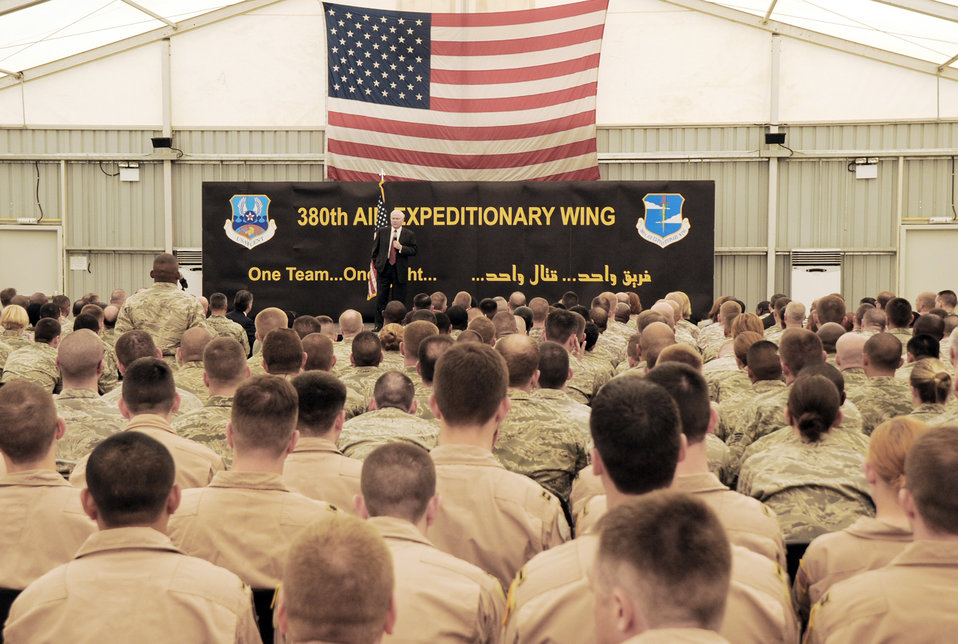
Defense secretary discusses Iraq, Afghanistan with deployed troops

Defense Secretary Robert M. Gates addresses the men and women of the 380th Air Expeditionary Wing March 11, 2010, at an air base in Southwest Asia. The stop at the 380th AEW was part of Secretary Gates' trip through several countries meeting with U.S. allies.